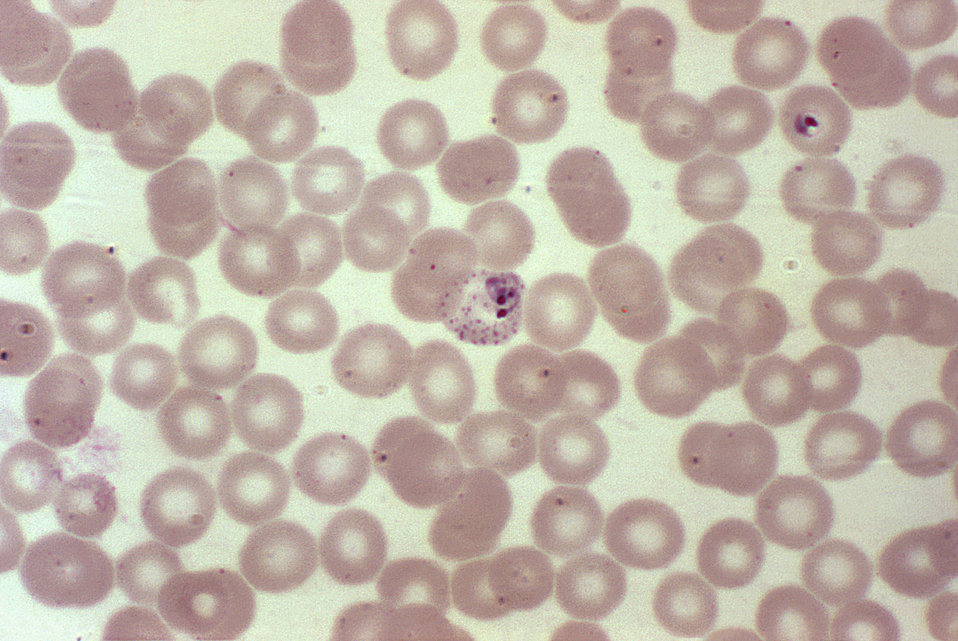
A photomicrograph of a blood smear showing erythrocytes containing developing P. vivax parasites, magnified 1000X.